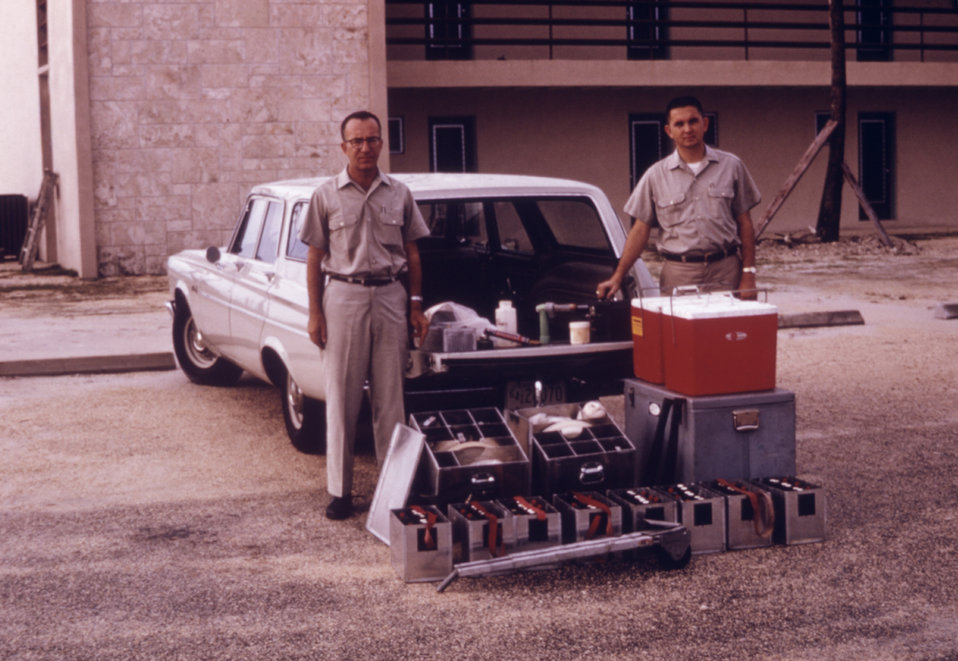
This 1980 image depicts two field researchers standing with field gear to be used during an arbovirus isolation study.